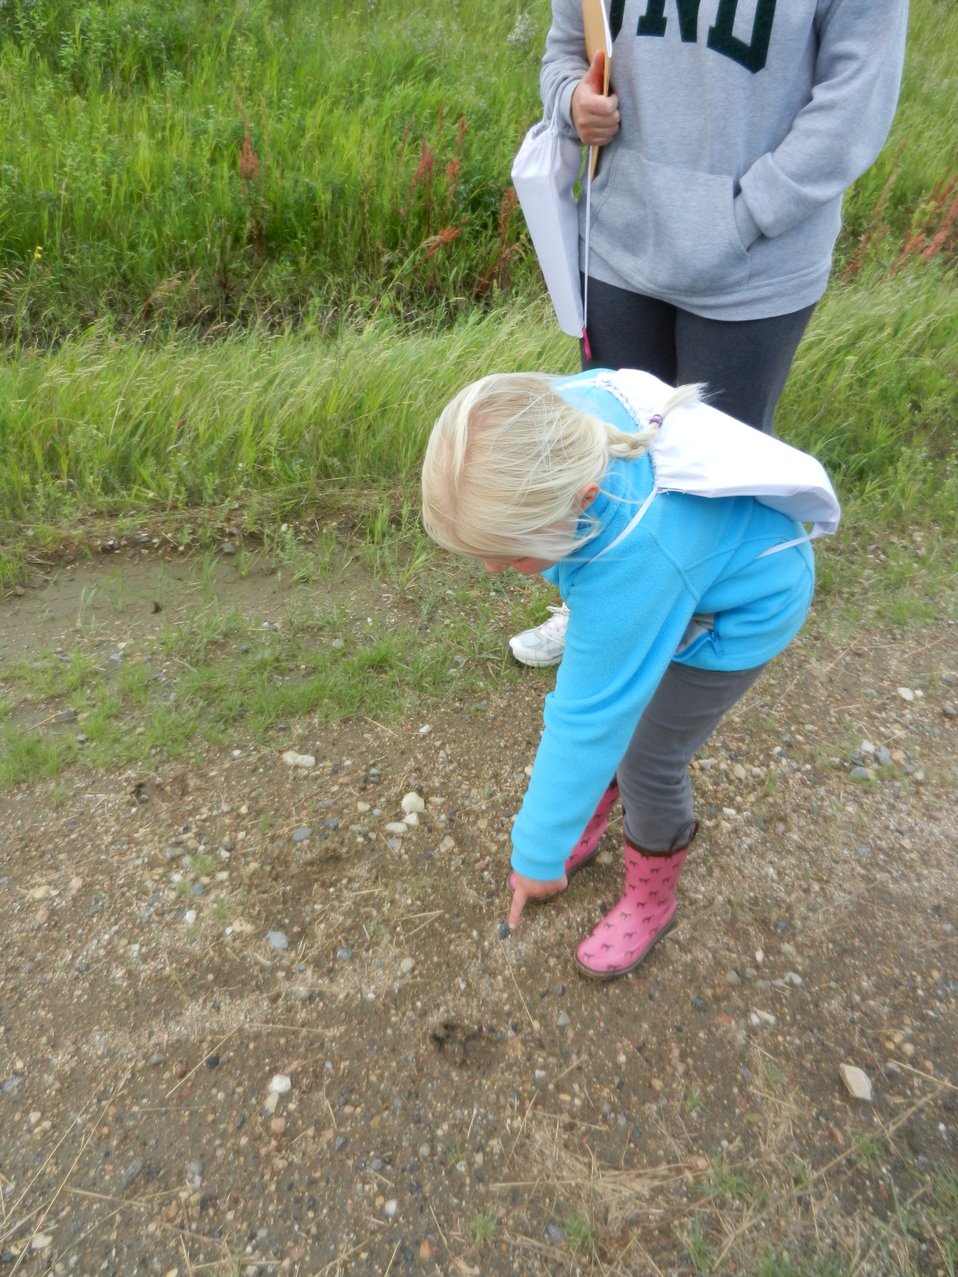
Deer Tracks

This young hiker spotted deer tracks on a nature hike program in Des Lacs National Wildlife Refuge in North Dakota.